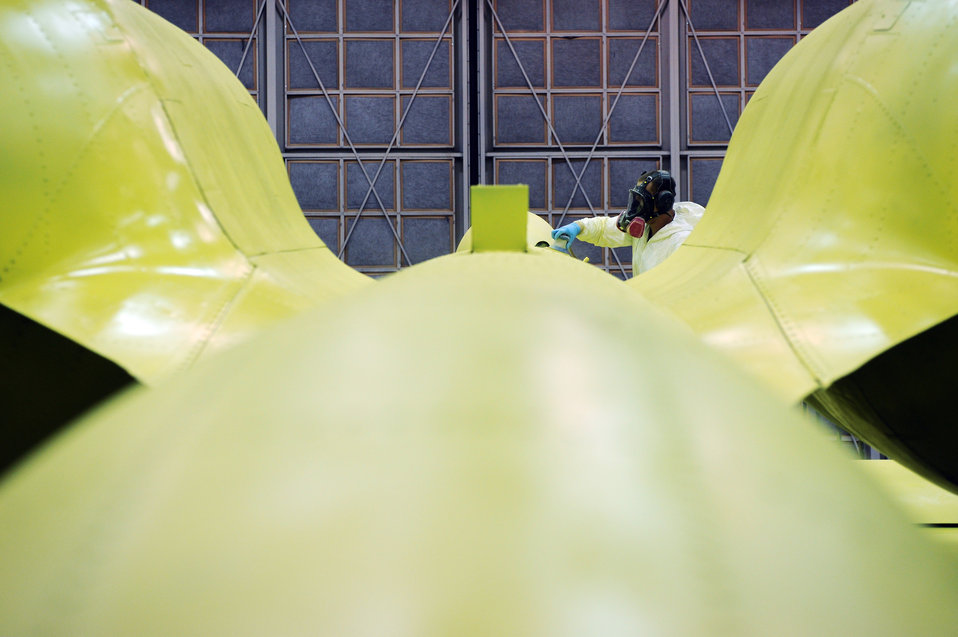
Preserving heritage

Airman 1st Class Timothy Coulson sands down the primer on an A-10 Thunderbolt II Aug. 20 at Eielson Air Force Base, Alaska, to prepare it for its base coat of paint. Members of the 354th Maintenance Squadron fabrication shop are working on restoring this A-10 to be a static display in the base's Heritage Park. This aircraft will be a permanent reminder of the 355th Fighter Squadron's presence here before its deactivation in 2007.